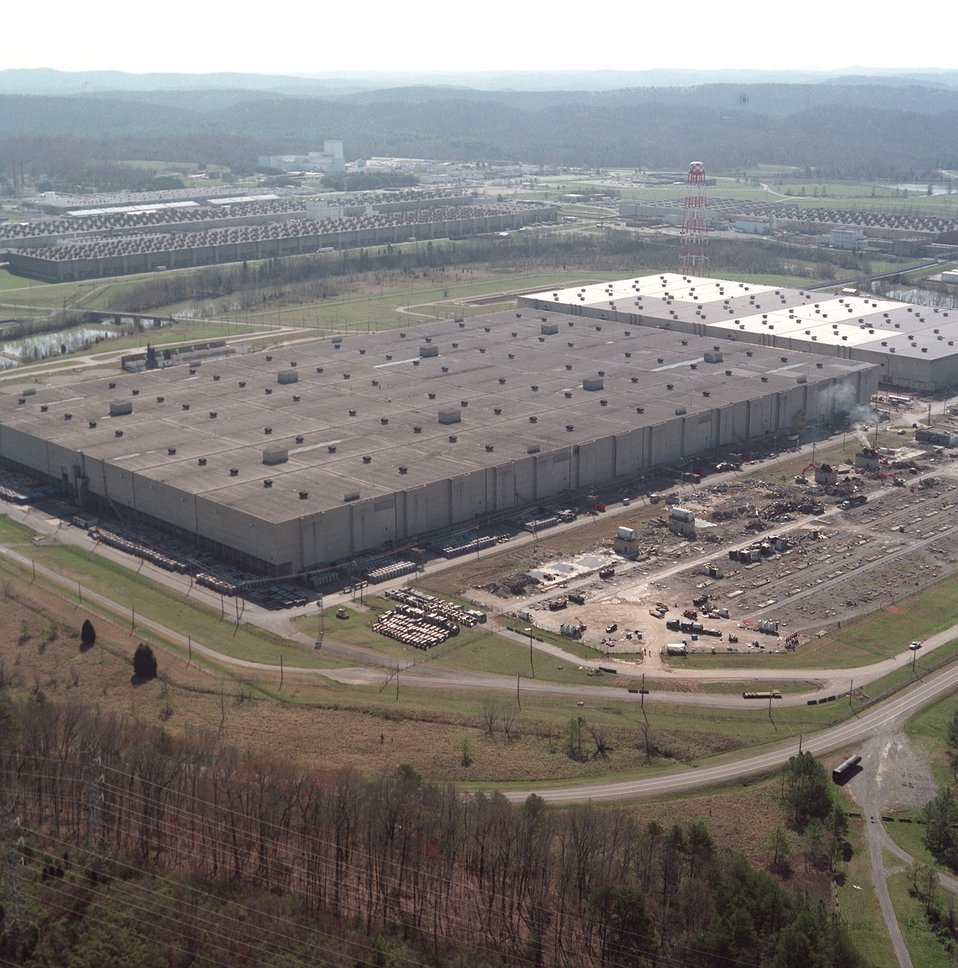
Oak Ridge Building K-33 Scheduled for Demolition

Building K-33 currently sits on roughly 32 acres of DOE’s East Tennessee Technology Park.

Recovery Act funding has made it possible to begin projects vital to Oak Ridge’s missions now rather than later. The K-33 demolition is the latest example. Completion of this project will accelerate Oak Ridge’s existing environmental protection and site cleanup goals while reducing DOE’s footprint by 32 acres.